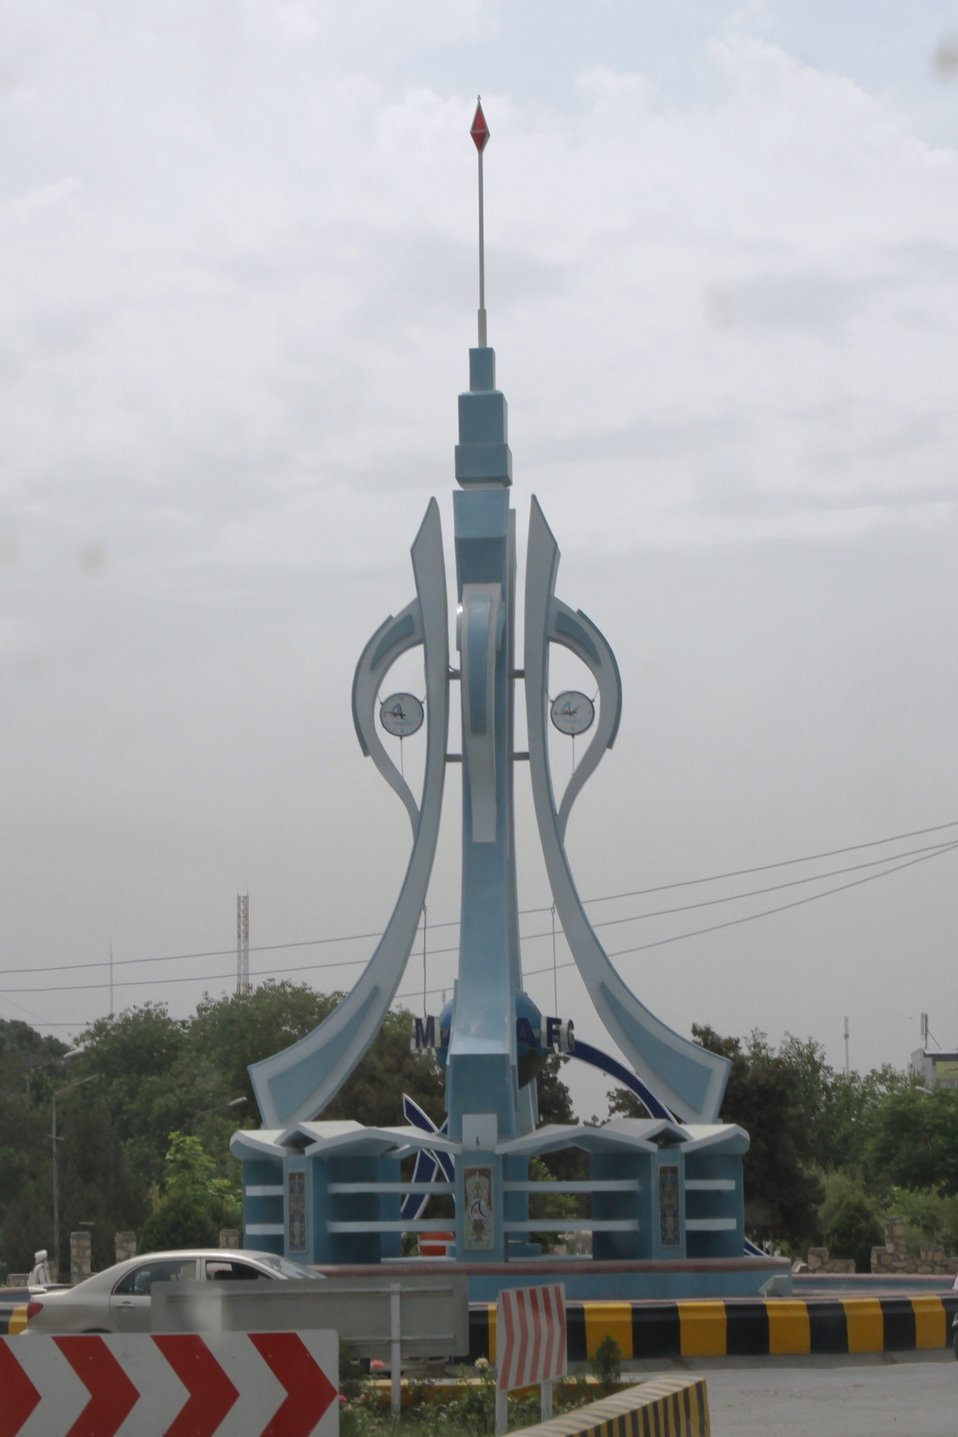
100525 Hirat Marble Conference 580